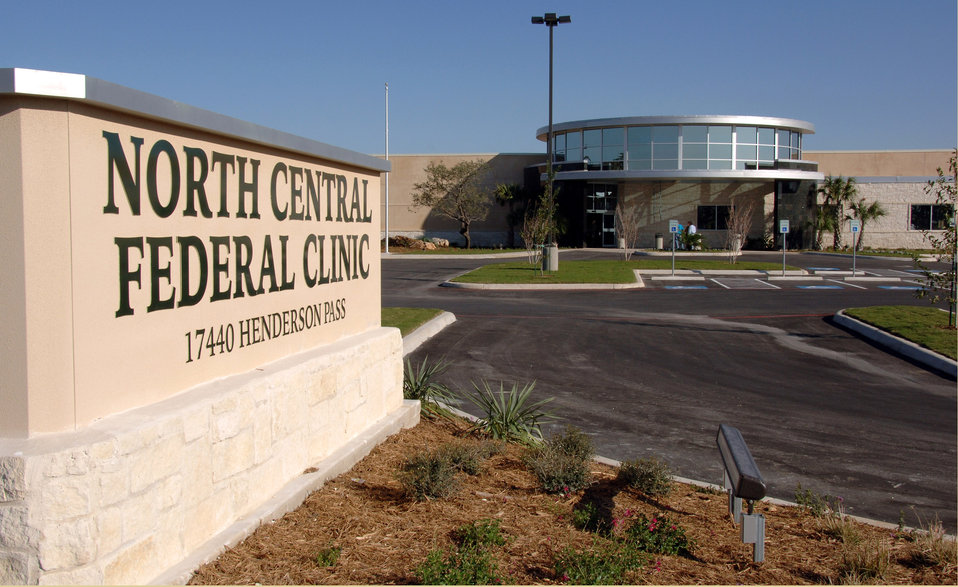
VA, DOD joint venture future of medical care

The North Central Federal Clinic, a joint venture between the Department of Veterans Affairs and the Department of Defense, is scheduled to open Dec. 4 in San Antonio. The clinic is the first facility to use joint VA and DOD leadership and staffing.